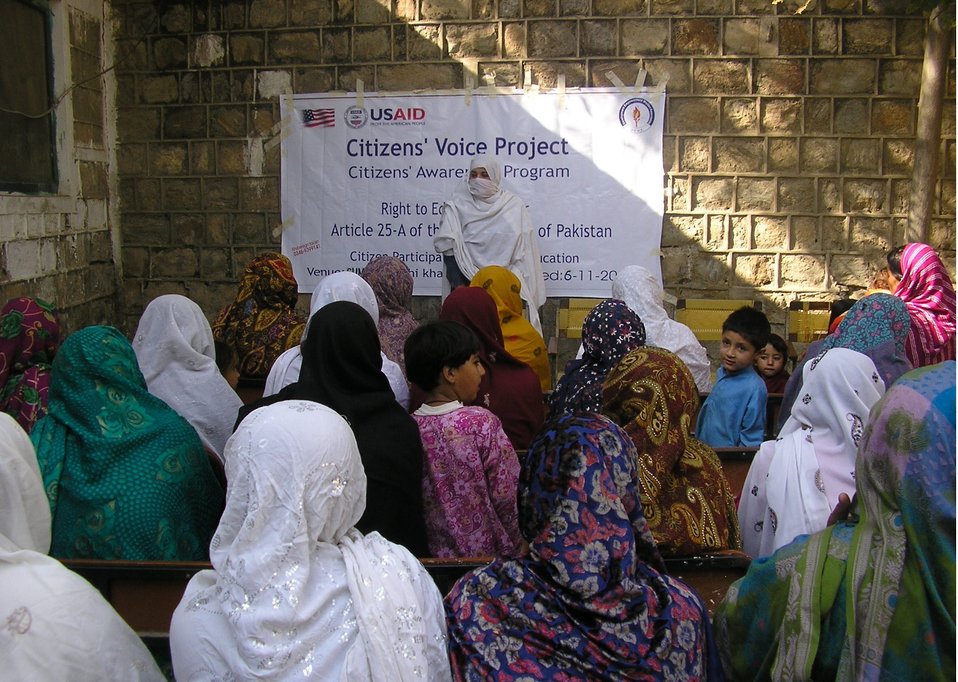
Caption 9 - DEWA - Dir KP - Community Meeting with Females on Right to Education

A social organizer of Development Empowerment Women Association (DEWA) informs a gathering of local women on the right to education as stated in the 18th Constitutional Amendment. DEWA is a civil society organization implementing a project on Education Sector Reforms in Dir Lower, Khyber Pakhtunkhwa, under USAID’s Citizens’ Voice Project.